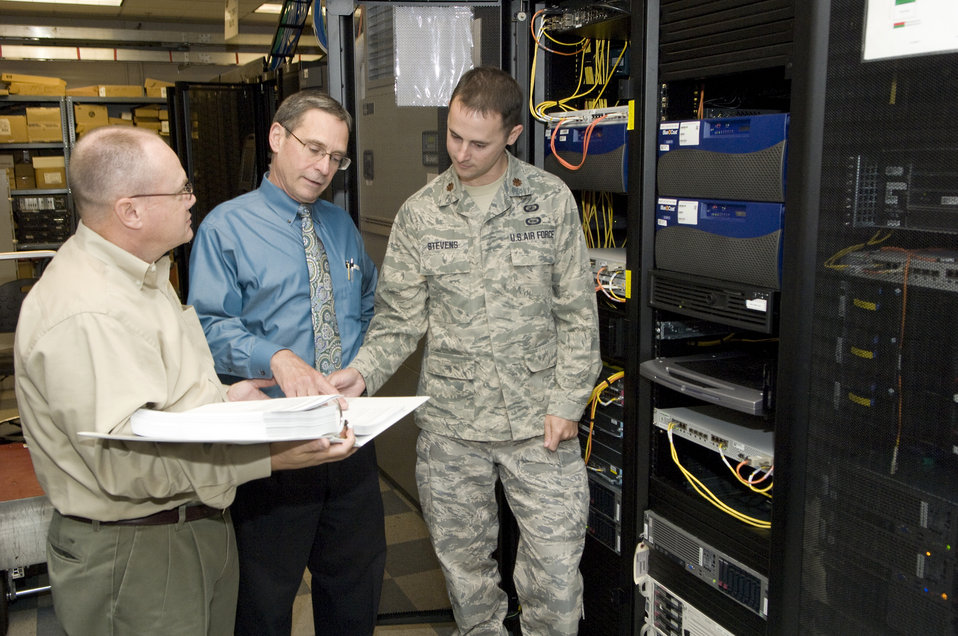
Electronic Systems Center

Kent White (left), Dennis Murray and Maj. Jon Stevens discuss upgrades for the Air Force network July 23, 2010, at Hanscom Air Force Base, Mass. The Electronic System Center's Cyber/Integration Division recently completed modernization projects to the network, which improved capabilities, saving the Air Force approximately $24 million in the process. Mr. White is a boundary router modernization project team member. Mr. Murray is the Web proxy modernization project lead. Major Stevens is the Network Defense Systems chief.